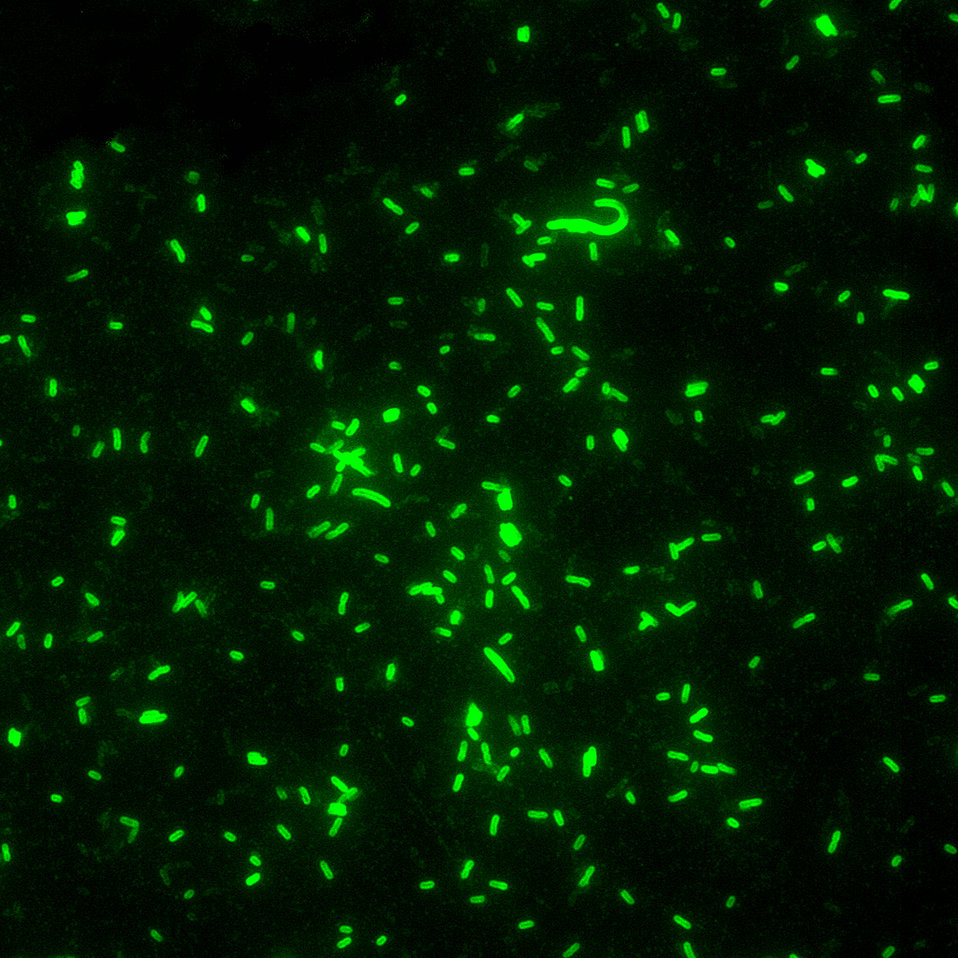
Yersinia pestis, Direct Fluorescent Antibody Stain (DFA), 40x Magnification.